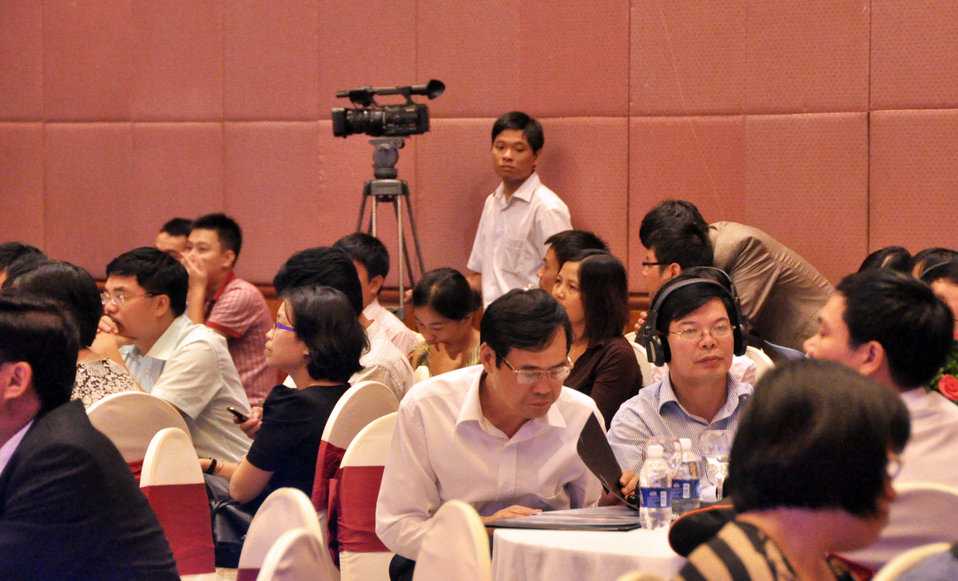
USAID's Support for Trade Acceleration Project (USAID STAR Plus) Closing Ceremony

Hanoi, August 26, 2013.